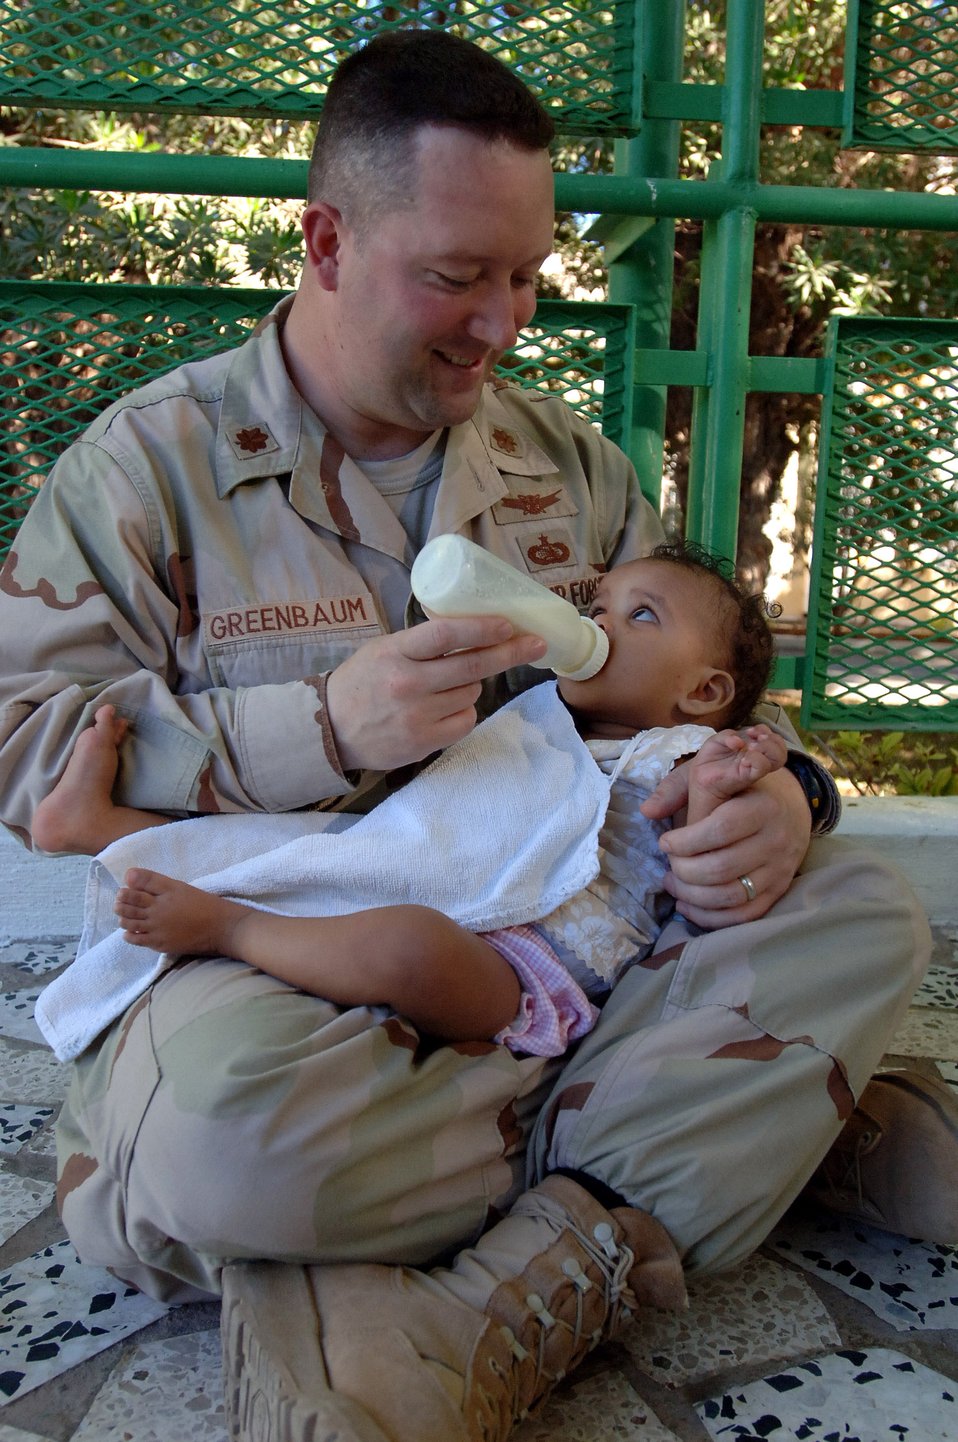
Airmen spend special time with orphans

Maj. Lanny Greenbaum feeds a baby Jan. 26 during a visit to an orphanage in Djibouti. Servicemembers supporting the Combined Joint Task Force-Horn of Africa mission donate their time three times a week to help French nuns who run the facility feed the babies at dinner time. More than 60 babies and toddlers are cared for at the facility. Major Greenbaum, a Plain City, Ohio, native, is the CJTF-HOA information management officer.